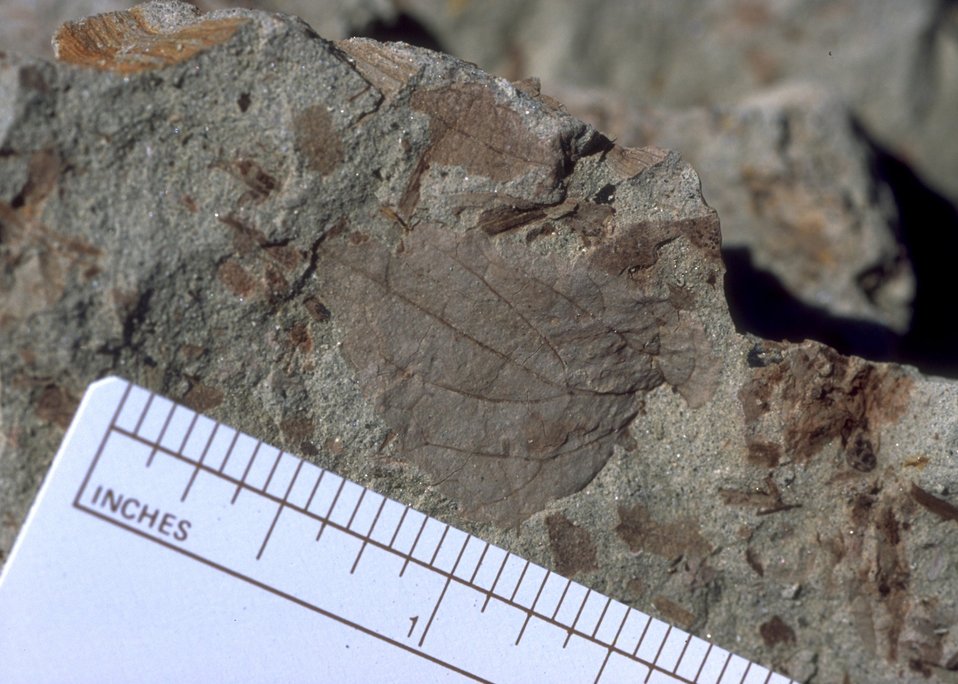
Close up of fossil vegetation, Cedar Ridge Paleo area, Worland Field Office.